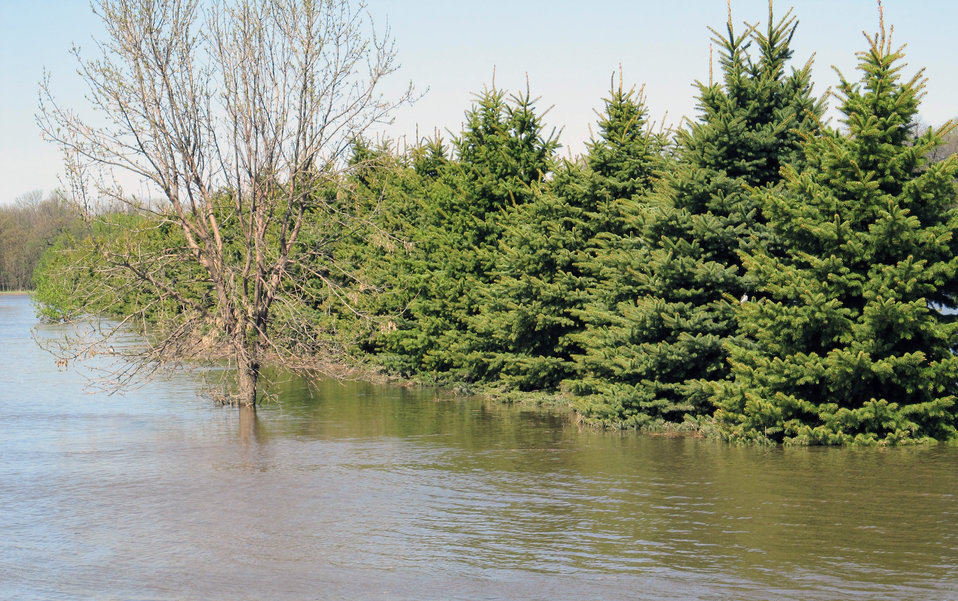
Flooding and water damage in the Park and Tongue River Watersheds located in Cavalier, Pembina and Cavalaier Counties in ND on Thursday, May 23, 2013.